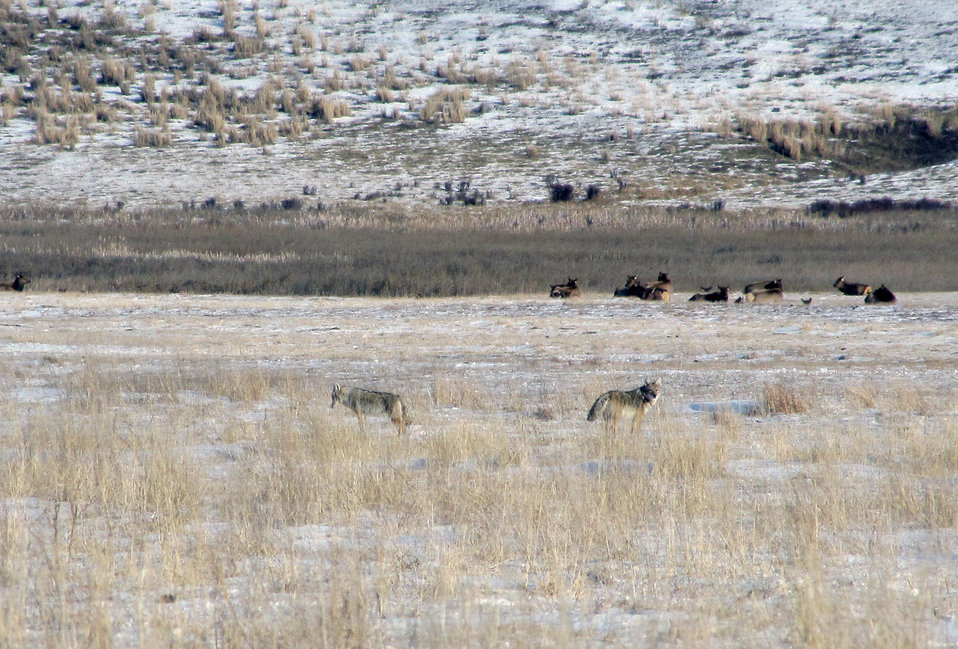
A Pair on the Prowl

Two coyotes make their way across a field with a group of elk in the distance.